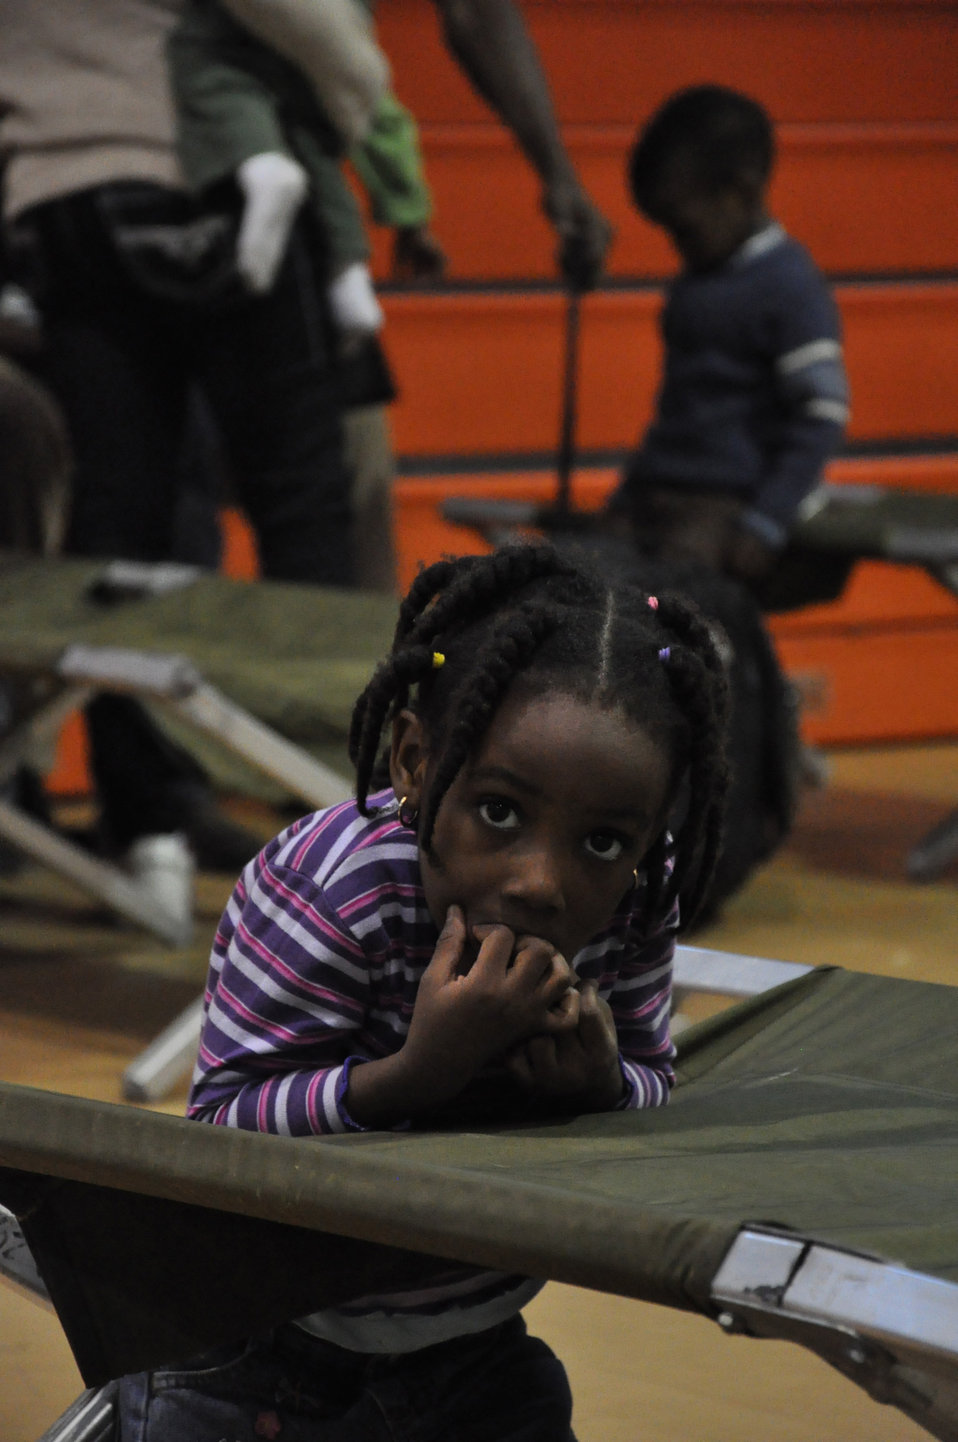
Homestead Air Reserve Base becomes hub for Haitian quake relief efforts

People of all ages have been affected by the devastation accompanied by the Earthquake in Haiti. Men, women, and children have been evacuated to the Homestead Air Reserve Base in order to process through customs, after providing proper citizenship documentation they are escorted home.